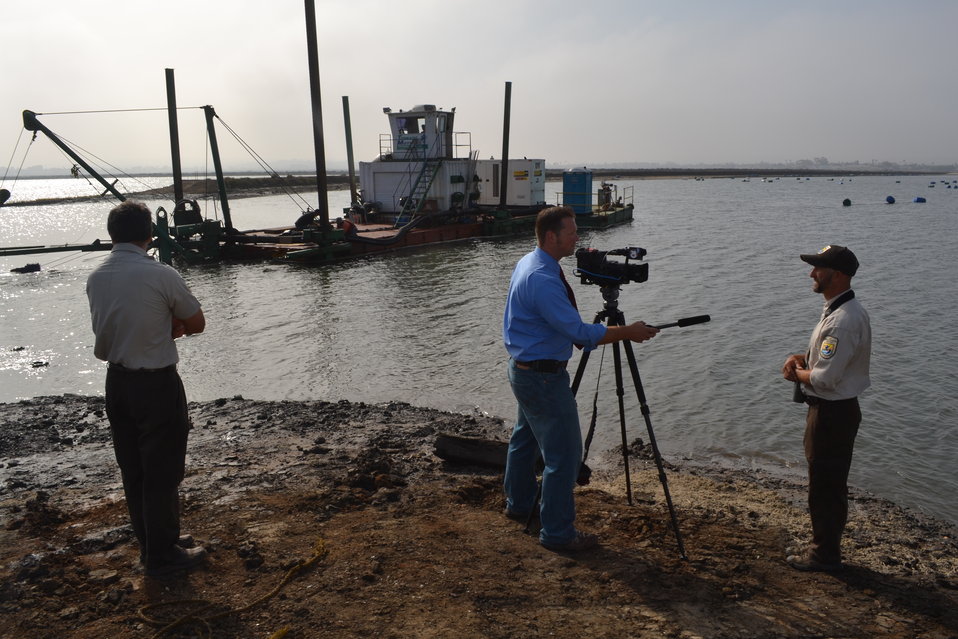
Channel 10 News story

Refuge Operations Specialist Kurt Roblek, and Project Leader for the San Diego NWR Complex Andy Yuen, get interviewed during the final breach of Pond 11, by Channel 10 News reporter, Joe Little.